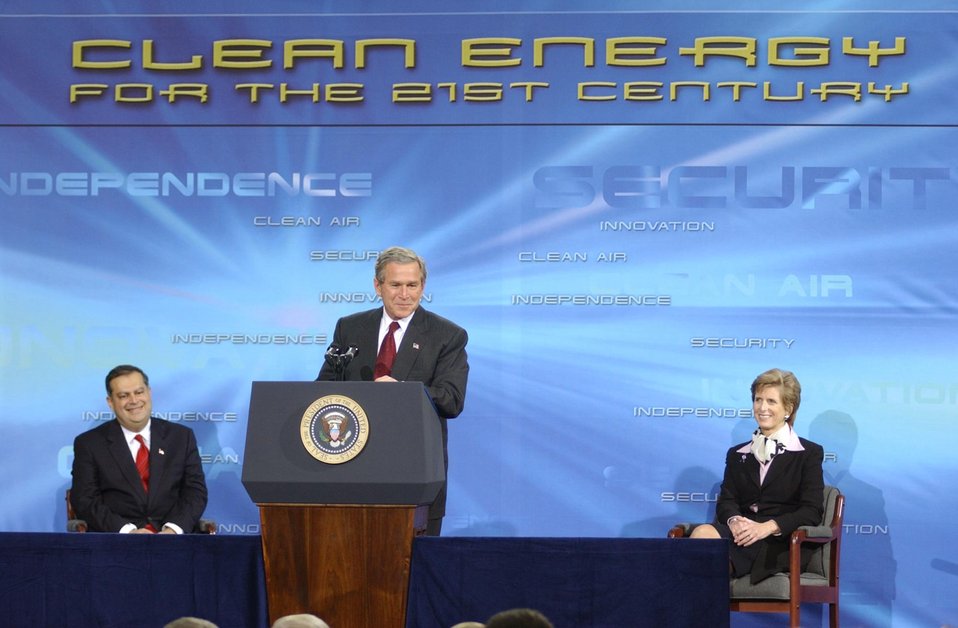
PRESIDENT GEORGE W. BUSH AT THE PODIUM WITH SECRETARY OF ENERGY ABRAHAM AND EPA ADMINISTRATOR CHRISTIE TODD WHITMAN.

AS PART OF THE FREEDOMCAR (COOPERATIVE AUTOMOTIVE RESEARCH) AND FUEL INITIATIVE, THE 'CLEAN AIR FOR THE 21ST CENTURY' EXHIBIT AT THE NATIONAL BUILDING MUSEUM, 2-6-03, SHOWED EXAMPLES OF INDUSTRY PARTNERING WITH GOVERNMENT TO DEVELOP EFFICIENT HYDROGEN FUEL CELLS. THE EXHIBIT INCLUDED VEHICLES, CELL PHONES, LAP TOP COMPUTERS AND CAMERAS THAT CAN BE POWERED BY HYDROGEN FUEL CELLS.